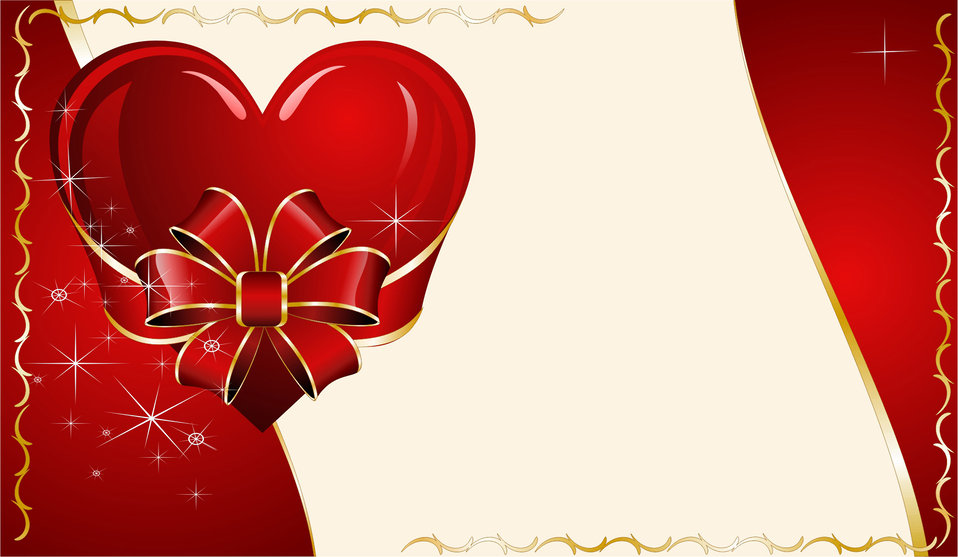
Abstract background with hearts

Red abstract background with hearts and gold lines and bow..